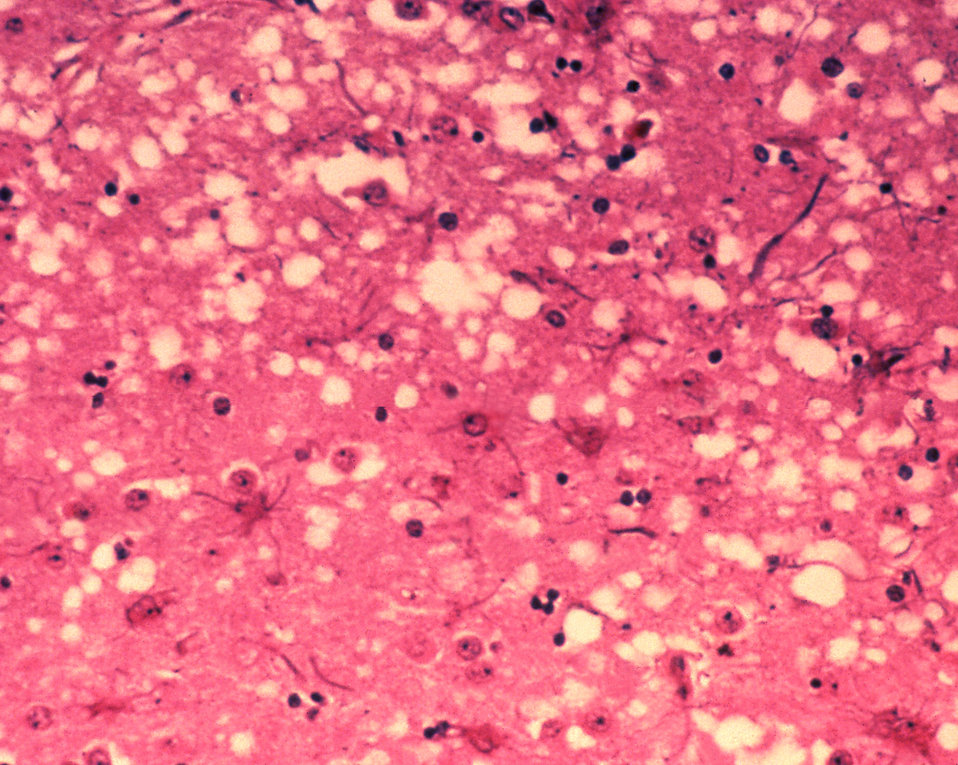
This micrograph of brain tissue reveals the cytoarchitectural histopathologic changes found in bovine spongiform encephalopathy.